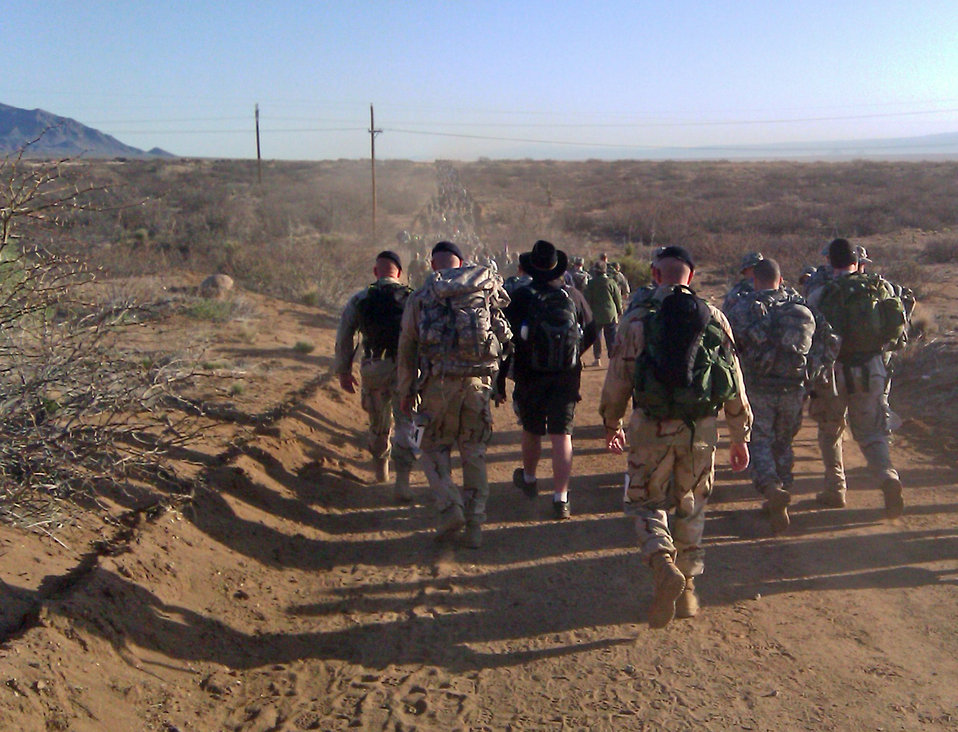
Luke Airmen honor Bataan march

Staff Sgt. Anthony Odell (left to right), 1st Lt. Derek Tosie, Jerry Haupt and Maj. Michael Borders march with thousands of participants toward the horizon during the Bataan Memorial Death March March 21, 2010, at White Sands Missile Range, N.M. Each of the participants finished the 26.2 mile march with a rucksack on their backs, each pack weighing between 35 and 51 pounds. The Airmen are assigned to the 56th Security Forces Squadron at Luke Air Force Base, N.M.